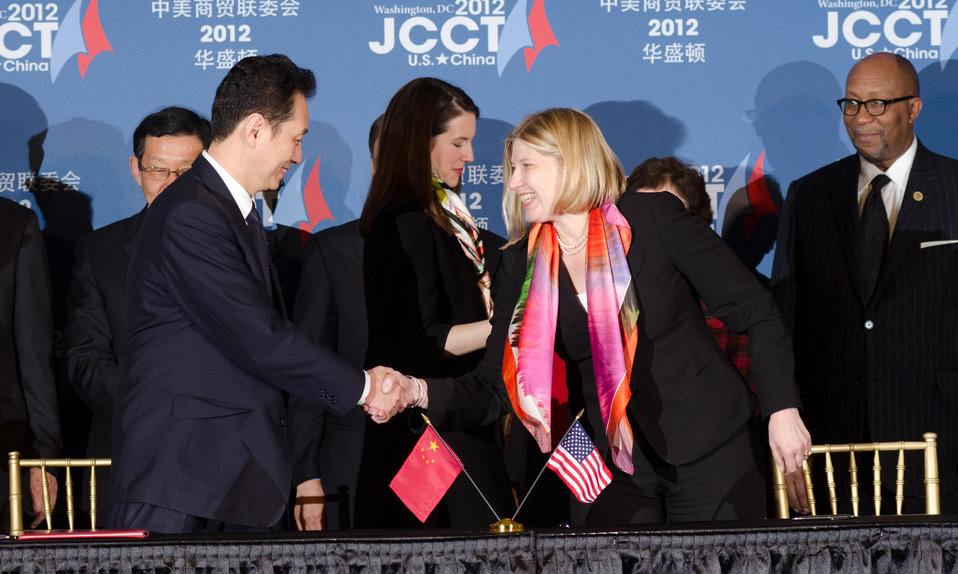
Chinese Ministry of Commerce Vice Minister Wang Chao (left) and U.S. Trade and Development Agency Acting Director Leocadia Zak (right) greet each other before signing the Memorandum of Understanding between the U.S. Trade and Development Agency and the Ministry of Commerce of the People’s Republic of China in Support of U.S.-China Trade Cooperation during a signing ceremony at the conclusion of the 23rd Session of the US-China Joint Commission of Commerce and Trade (JCCT) at the Andrew W. Mellon Auditorium in Washington, D.C. on Wednesday, Dec. 19, 2012. Supporting the signing is Chinese Vice Premier Wang Qishan (center). The JCCT holds high-level plenary meetings on an annual basis to review progress made by working groups that focus on a wide variety of trade issues. These working groups meet throughout the year to address topics such as intellectual property rights, agriculture, pharmaceuticals and medical devices, information technology, tourism, commercial law, environment, and statistics.